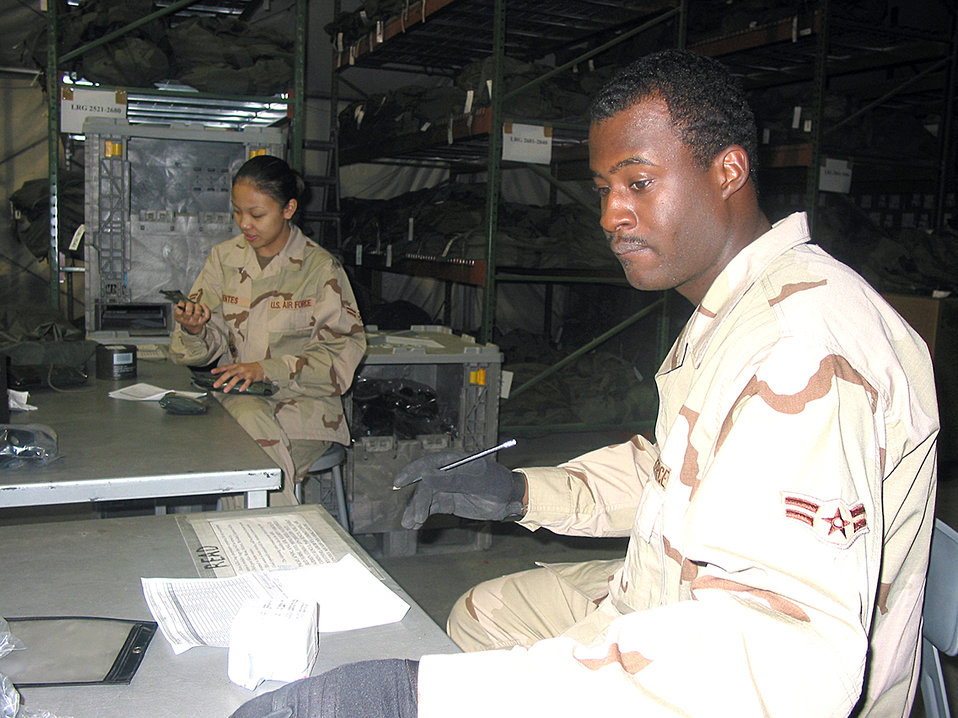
Operation Enduring Freedom

MANAS AIR BASE, Kyrgyzstan - (From left) Airman 1st Class Kathrine Fuentes and Airman 1st Class DeMarcus Mason inventory equipment before rebuilding a mobility bag here. The Airmen are assigned to the 376th Expesitionary Logistics Readiness Squadron.